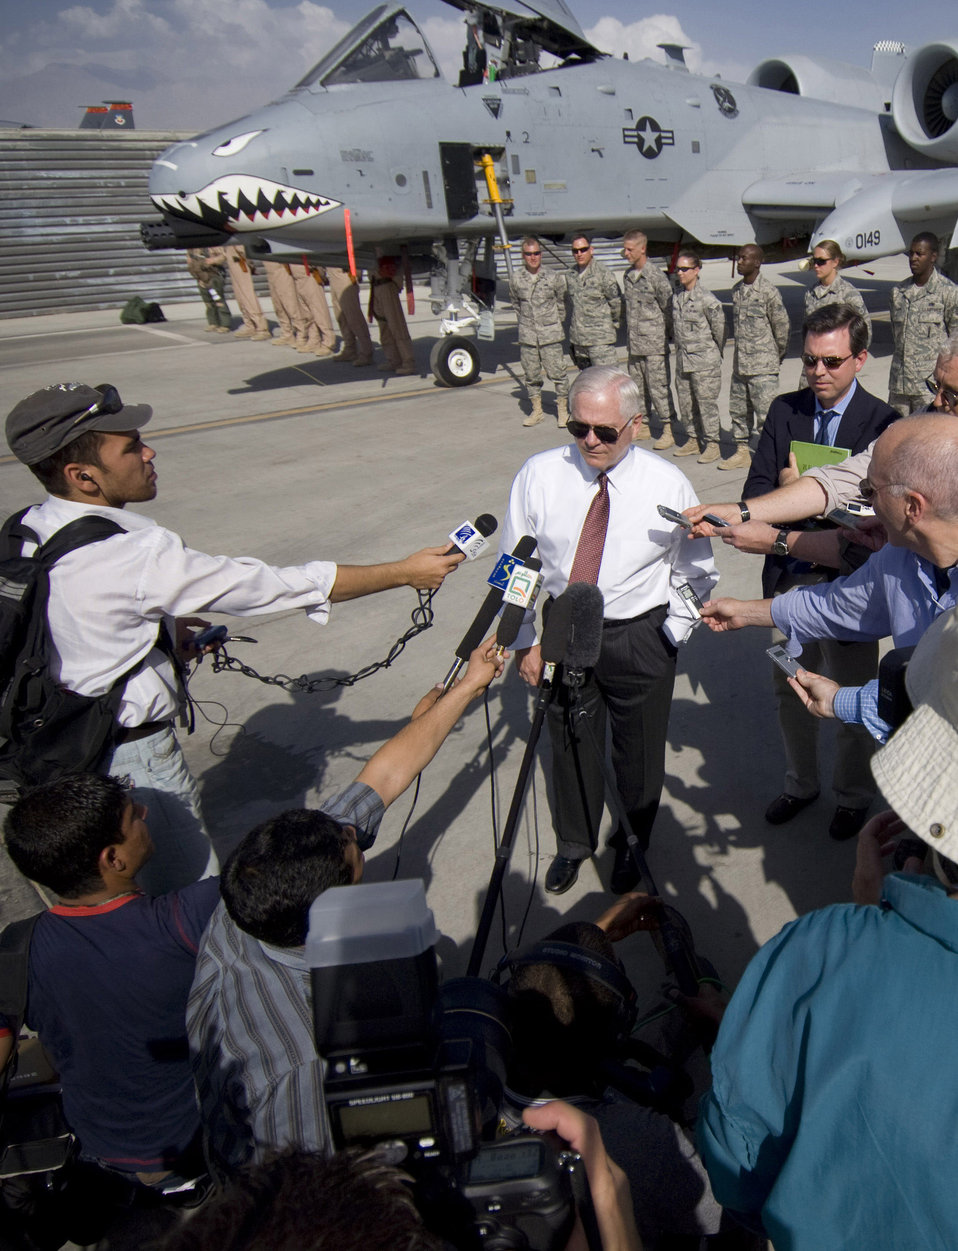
Secretary Gates examines close-air support at Bagram

Secretary of Defense Robert M. Gates gives a short press conference in front of an A-10 Thunderbolt II Sept. 17 at Bagram Airfield, Afghanistan. Secretary Gates discussed his thoughts on the Air Force mission in Afghanistan after meeting some of the Airmen and hearing about the role they play in Operation Enduring Freedom.